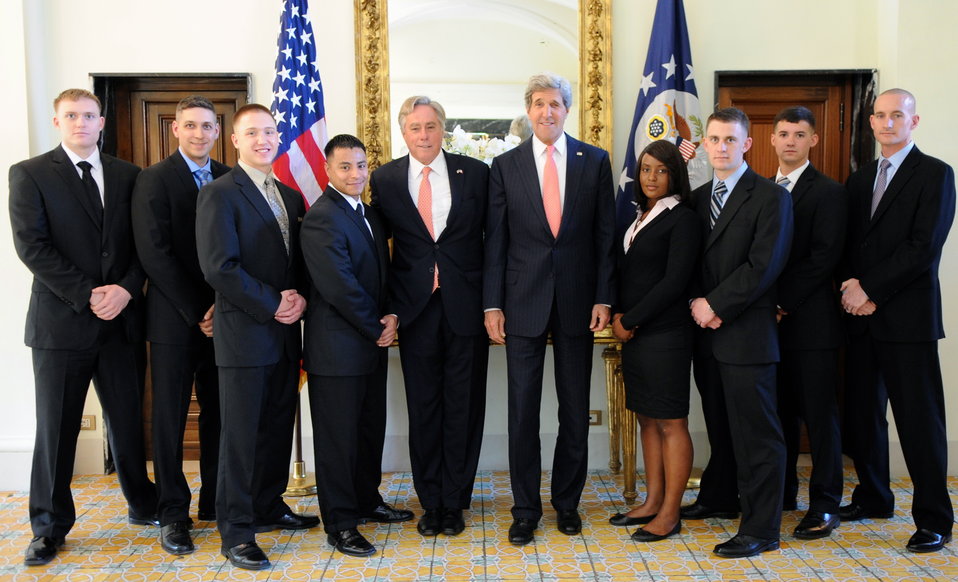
Secretary Kerry and Ambassador Thorne With Marine Security Guards

U.S. Secretary of State John Kerry and U.S. Ambassador to Italy David Thorne pose for a photo with members of U.S. Embassy Rome's Marine Security Guard Detachment at the U.S. ambassador's residence, the Villa Taverna, in Rome, Italy, on May 9, 2013.